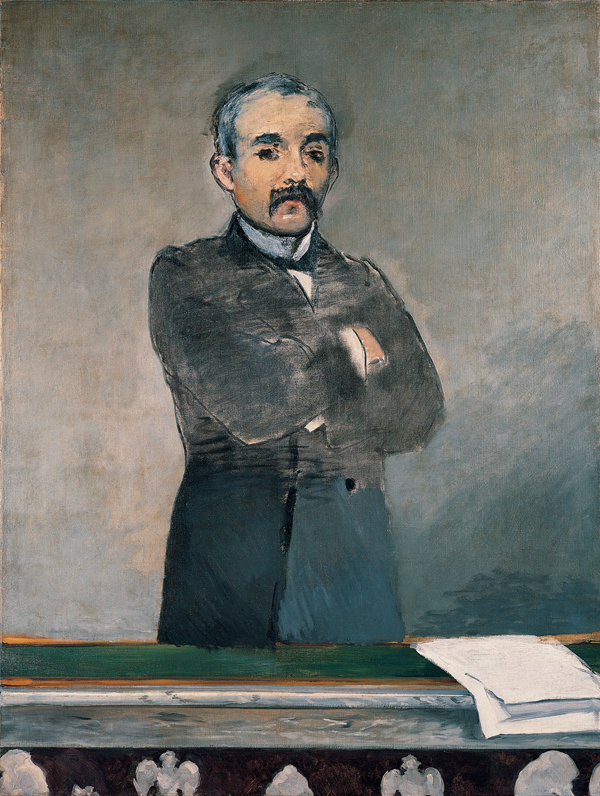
'Portrait of Georges Clemenceau', Kimbell Art Museum